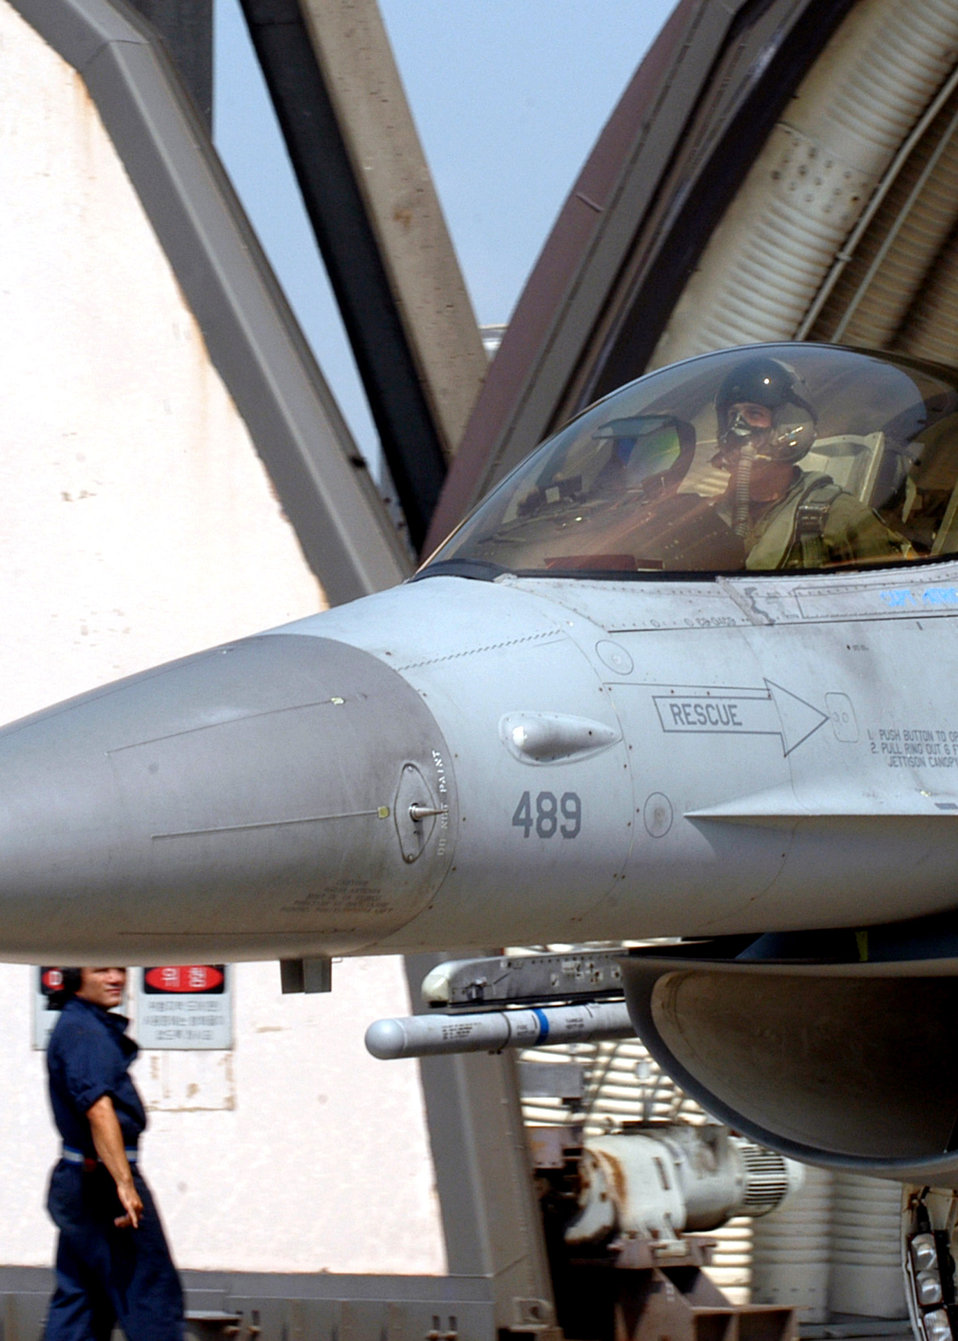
Kunsan pilot receives Distinguished Flying Cross

Capt. Dave Anderson taxis onto the runway Sept 10 at Kunsan Air Base, South Korea. Captain Anderson recently received the Distinguished flying cross for his actions in support of Operation Iraqi Freedom. Captain Anderson is a 35th Fighter Squadron flight commander.